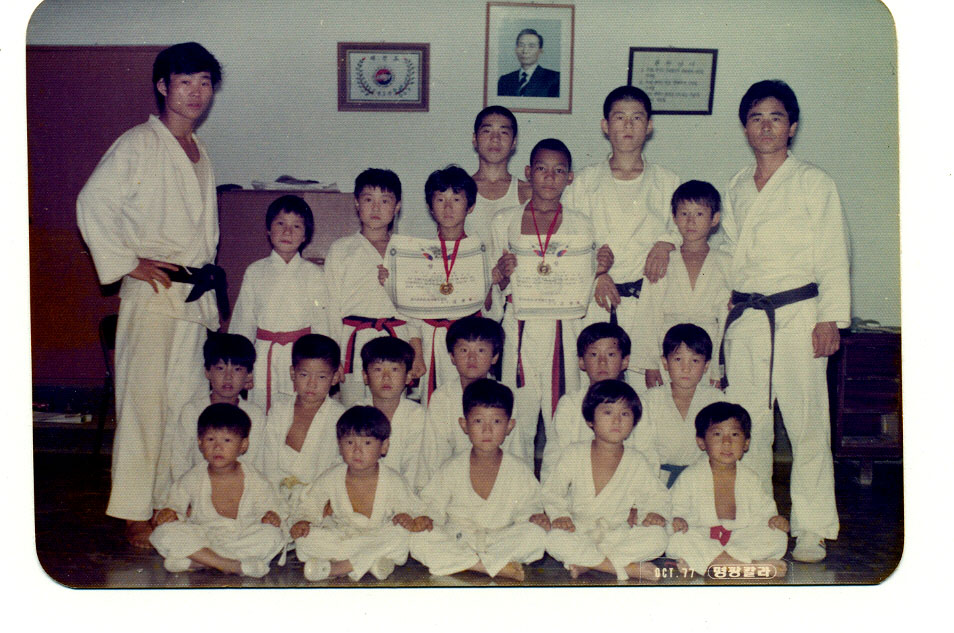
Air Force officer teaches at Korean Air University

The young Andrew